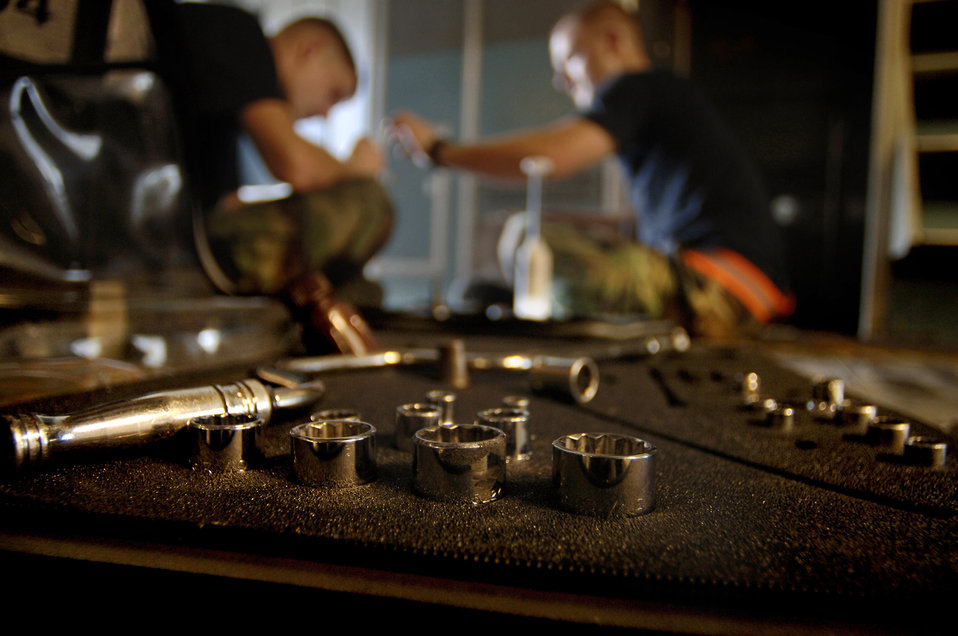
Charleston Airmen get Lean with maintenance

Airmen inspect a C-17 Globemaster III during the home station check Aug. 9 in a hangar at Charleston Air Force Base, S.C. Charleston AFB Airmen participated in a Lean event to eliminate waste and save time during the process.